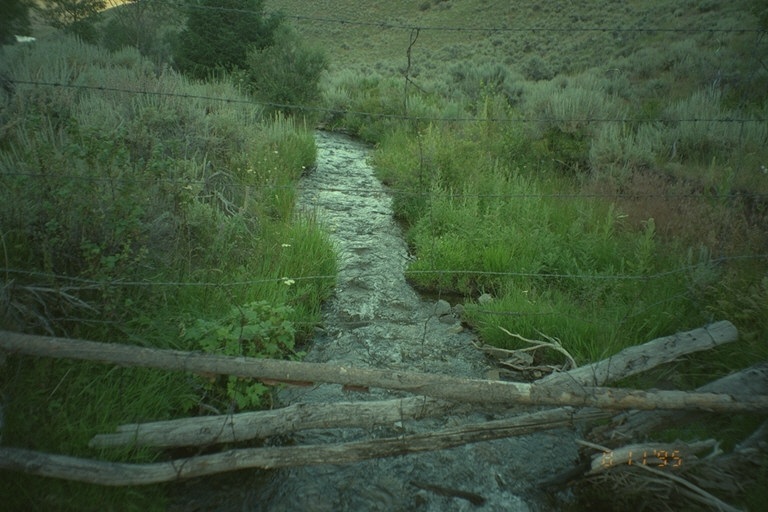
Riparian area Public Lands Salmon Field Office UCSC Upper Columbia Salmon Clearwater District